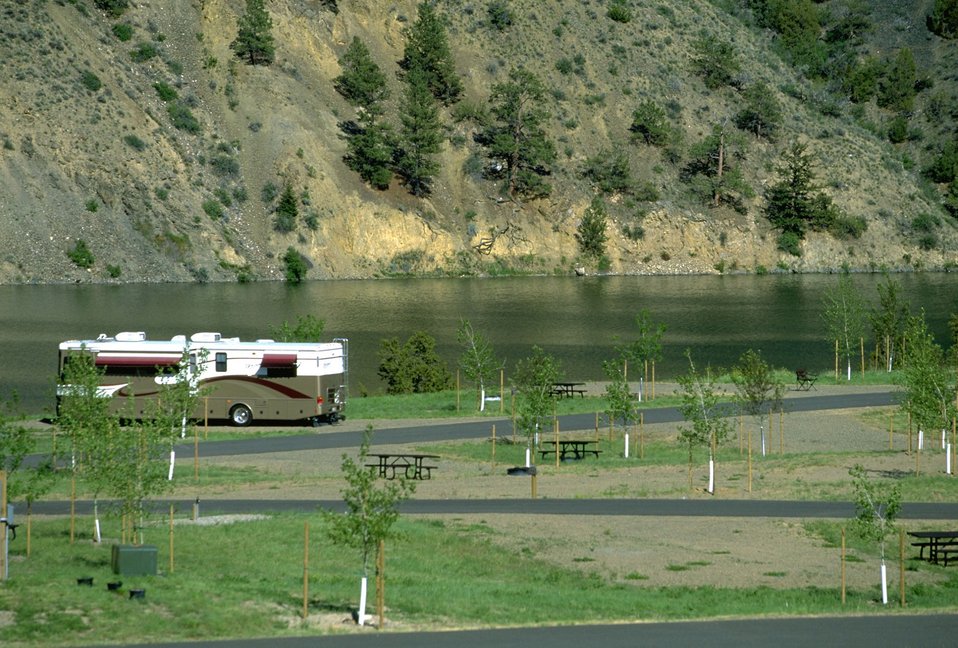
Newly- planted trees and recreational vehicle at Devils Elbow Campground